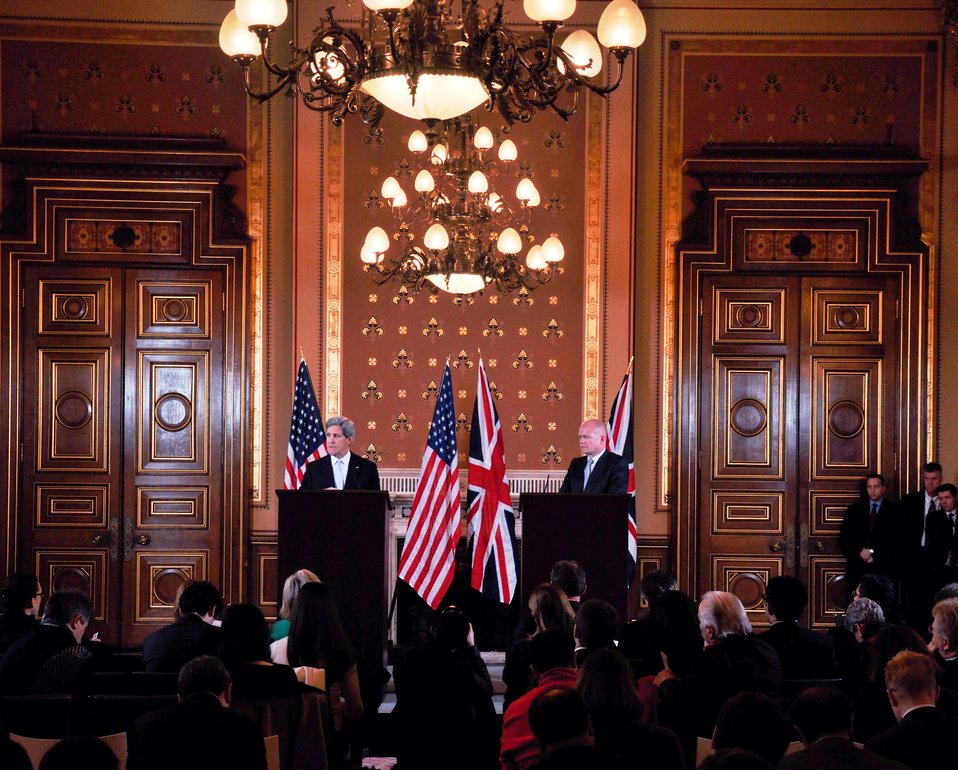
Secretary Kerry and UK Foreign Secretary Hague Address Reporters

U.S. Secretary of State John Kerry and UK Foreign Secretary William Hague address reporters at a joint press availability following their meetings at the Foreign and Commonwealth Office in London, UK on February 25, 2013.